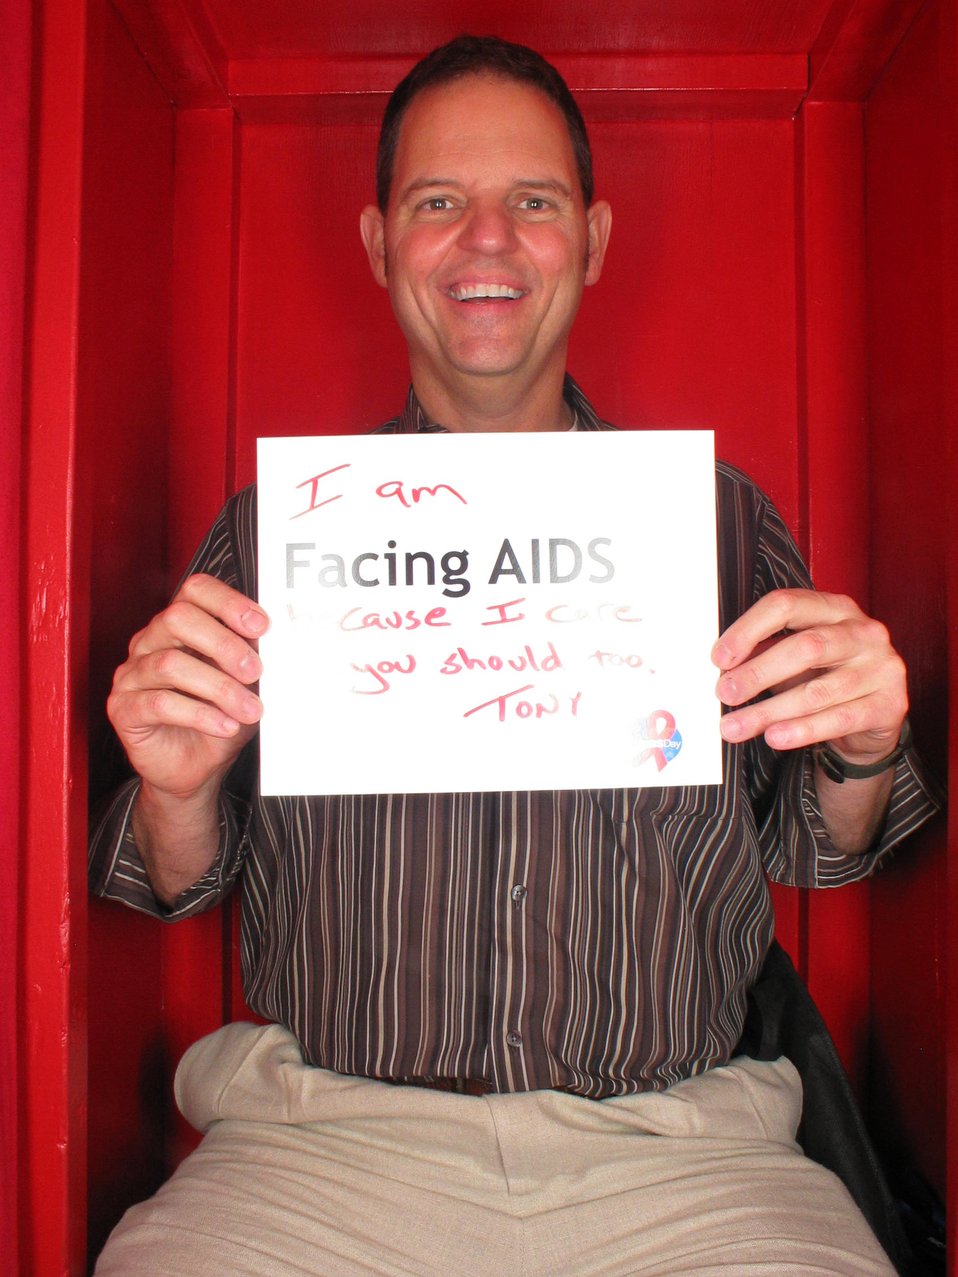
I am Facing AIDS because I care and you should too!